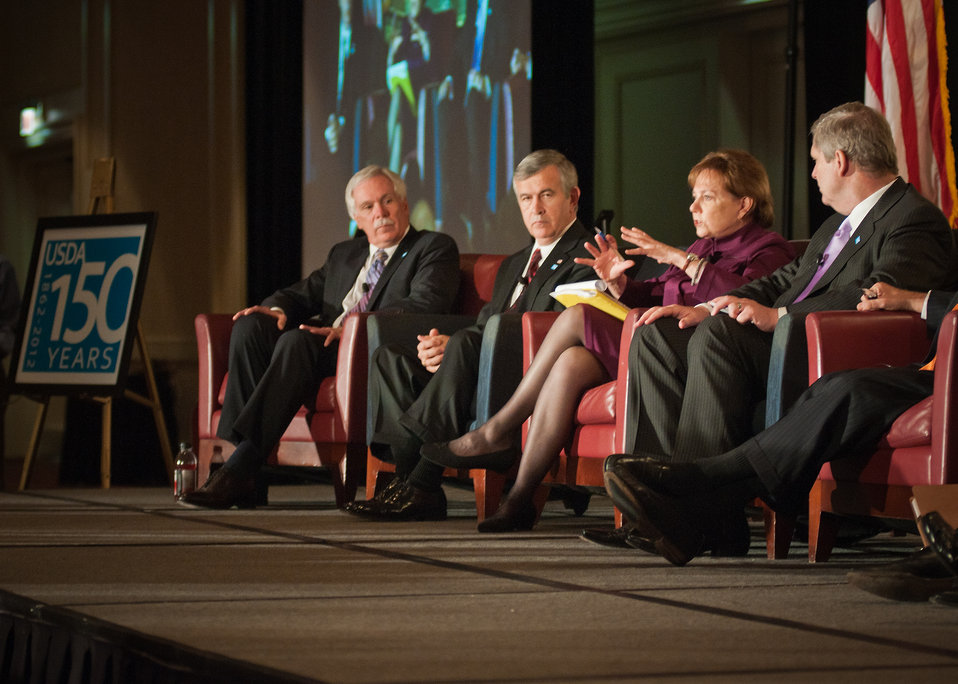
At the 2012 Agricultural Outlook Forum, “Moving Agriculture Forward” in Arlington, VA, held on Thursday, February 23, 2012, 7 former Secretaries of Agriculture sat on the plenary panel “Visions of the Future” hosted by current Agriculture Secretary Tom Vilsack. Ann Veneman speaks out during the panel discussions as Governor Ed Schafer (ND) (far left), Senator Mike Johanns (NE) (left) and Secretary Vilsack (right) listen.